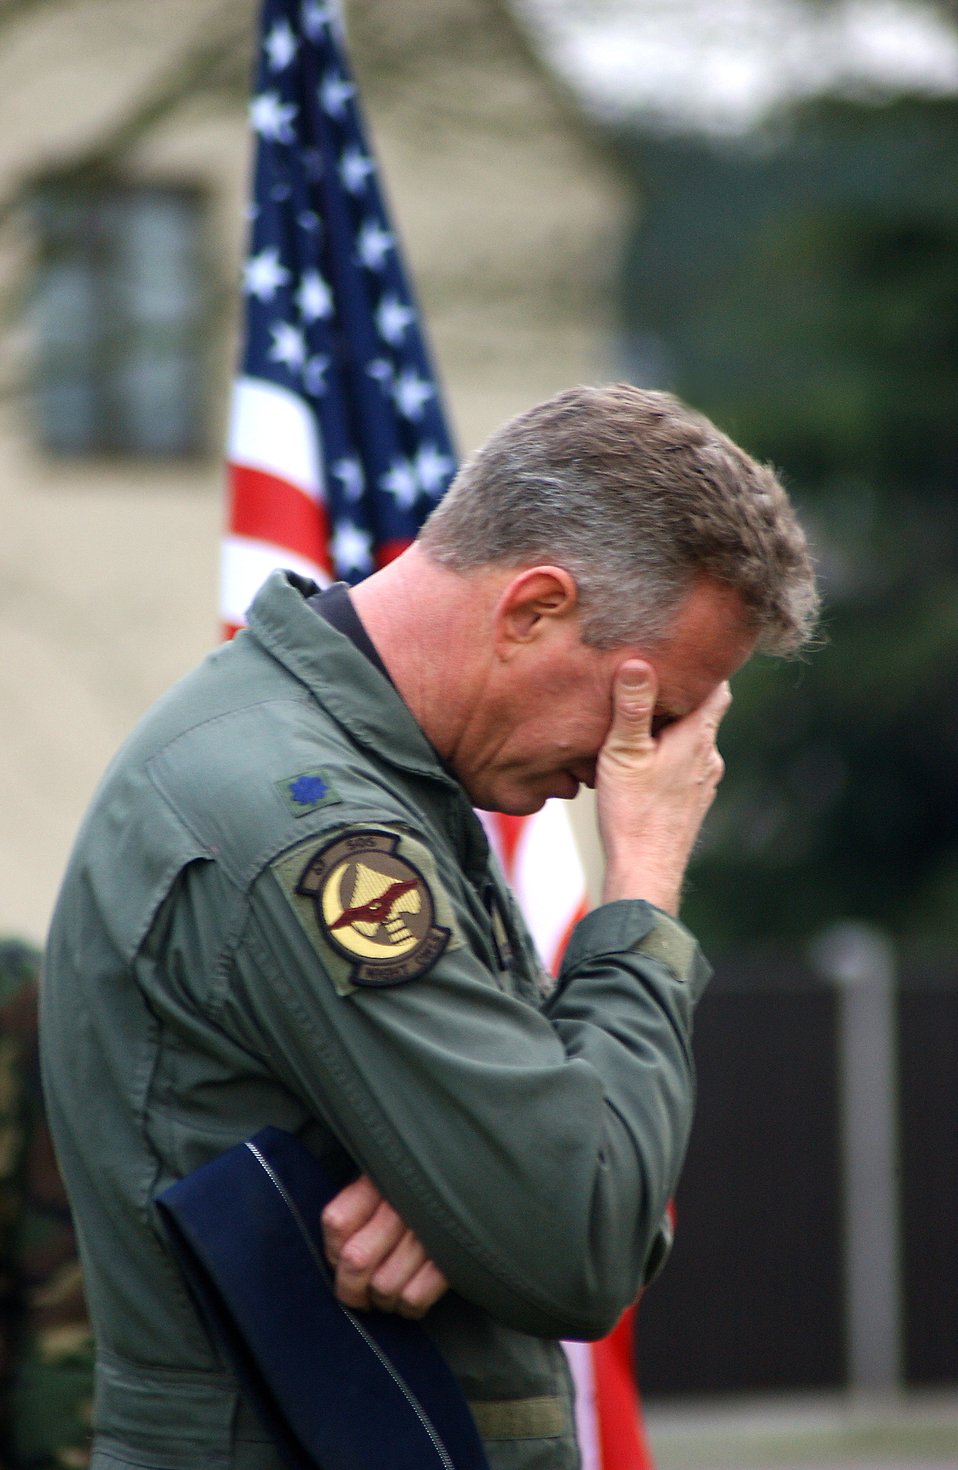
Honoring the fallen

ROYAL AIR FORCE MILDENHALL, Engalnd -- Lt. Col. Kenneth Denman grieves during a candlelight vigil here April 4 to honor nine Airmen who died in a crash while participating in an exercise in Albania on March 31. The Aircrew members were assigned to the Det. 2, 7th Special Operations Squadron and 25th Information Operations Squadron.